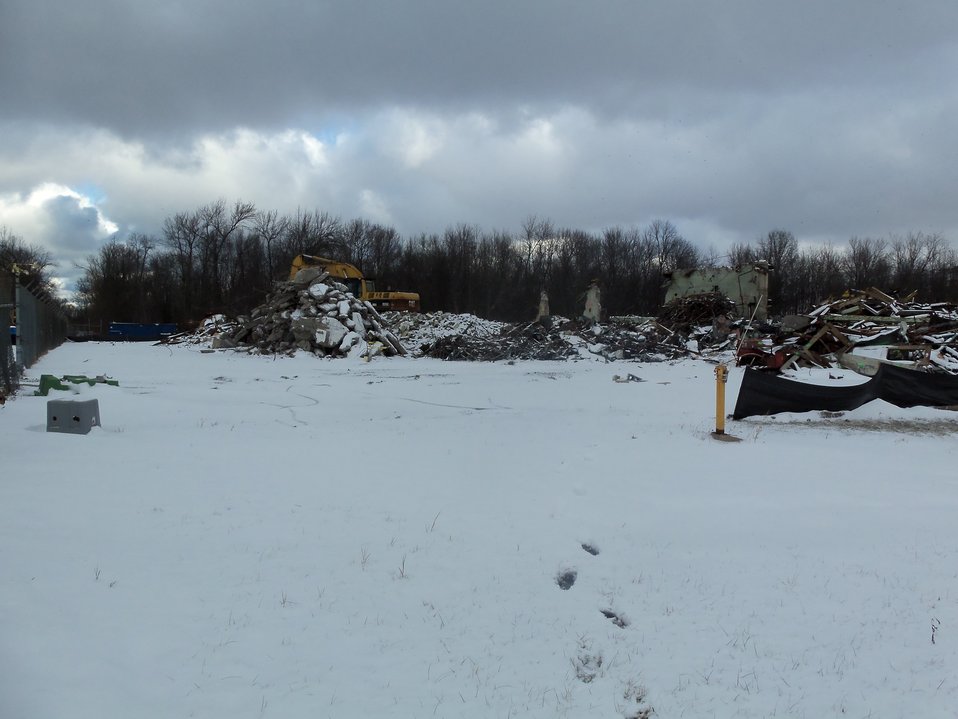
Building 401 debris remains.

Activities from the Niagara Falls Storage Site, which is associated with the former Lake Ontario Ordnance Works. Formerly Utilized Sites Remedial Action Program (FUSRAP), a program initiated in 1974 to identify, investigate and clean up or control sites that were part of the Nation's early atomic energy and weapons program. Activities at the sites that are eligible for FUSRAP were conducted by Manhattan Engineer District (MED) or the Atomic Energy Commission (AEC), both predecessors of the Department of Energy (DOE). The U.S. Army Corps of Engineers was assigned management of FUSRAP by Congress in 1997.